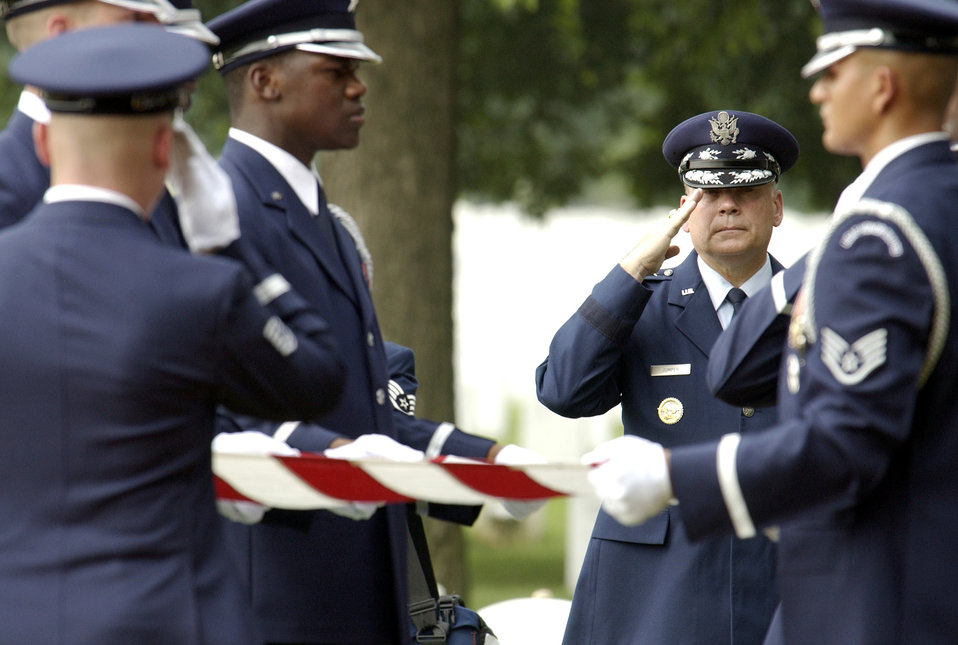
Final resting place

ARLINGTON, Va. -- Air Force Chief of Staff Gen. John P. Jumper salutes as Air Force Honor Guard members fold a flag during a funeral ceremony Aug. 29 for Lt. Col. William R. Watkins III and Capt. Eric B. Das at Arlington National Cemetery. Watkins and Das were killed April 7 when their F-15E Strike Eagle went down on a combat mission over Iraq. The fliers were assigned to the 333rd Fighter Squadron at Seymour Johnson Air Force Base, N.C.